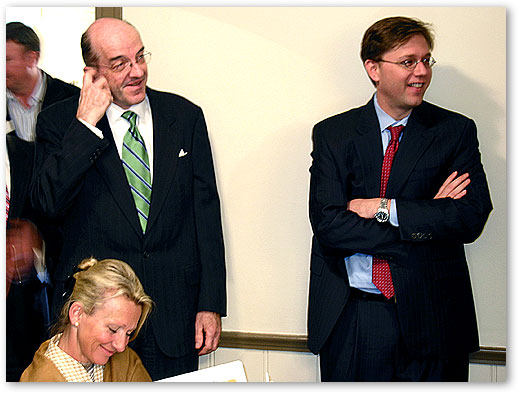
Chairman Kevin Martin, Commissioner Michael Copps, and Commissioner Deborah Tate at a CURRENT Communications Broadband Over Powerline demonstration in Dallas, Texas.